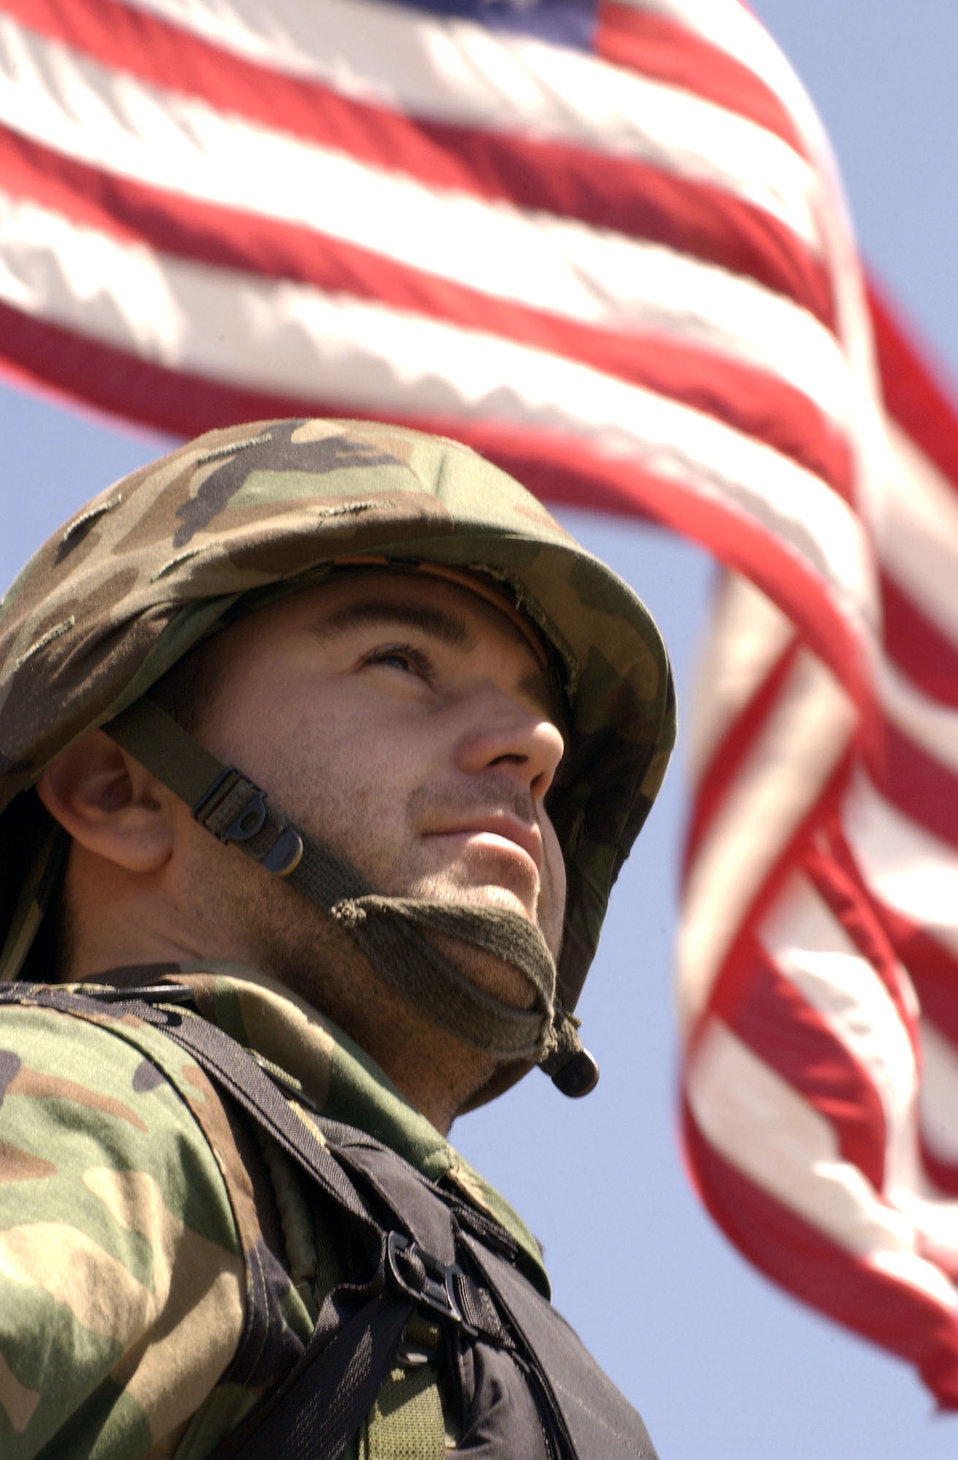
One moment

VANDENBERG AIR FORCE BASE, Calif. -- Senior Airman Eric Craft, a combat videographer, takes a moment before he proceeds to his next duties during North Star '03. The three-day readiness training exercise was held from April 22-24, 2003 at Vandenberg Air Force Base.